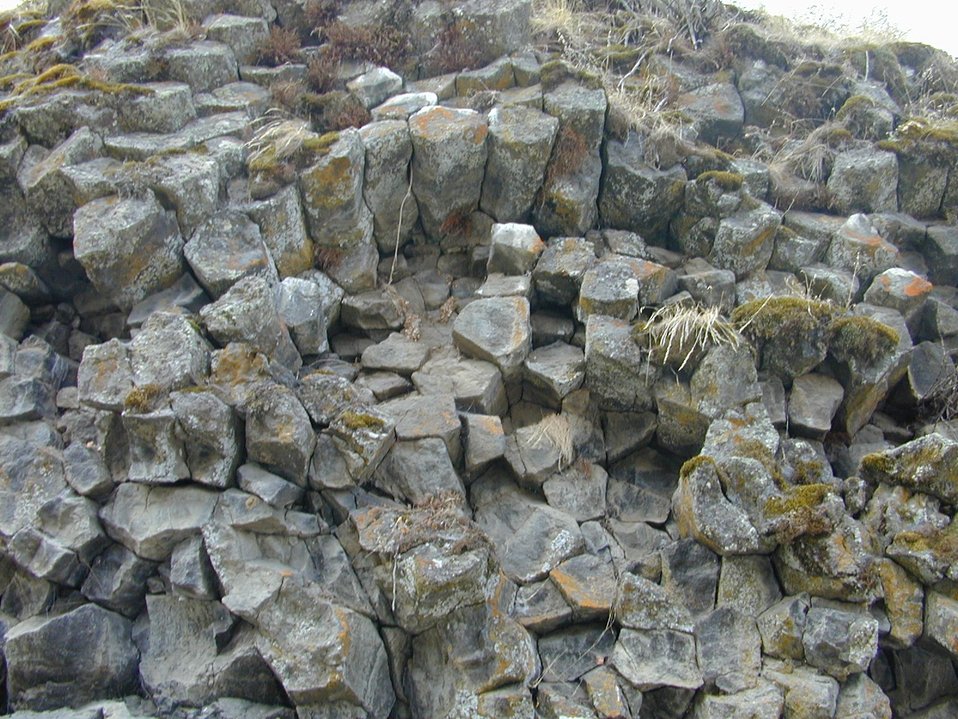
Hexagonal Basalt along the Lower Salmon River Cottonwood Field Office UCSC Upper Columbia Salmon Clearwater District